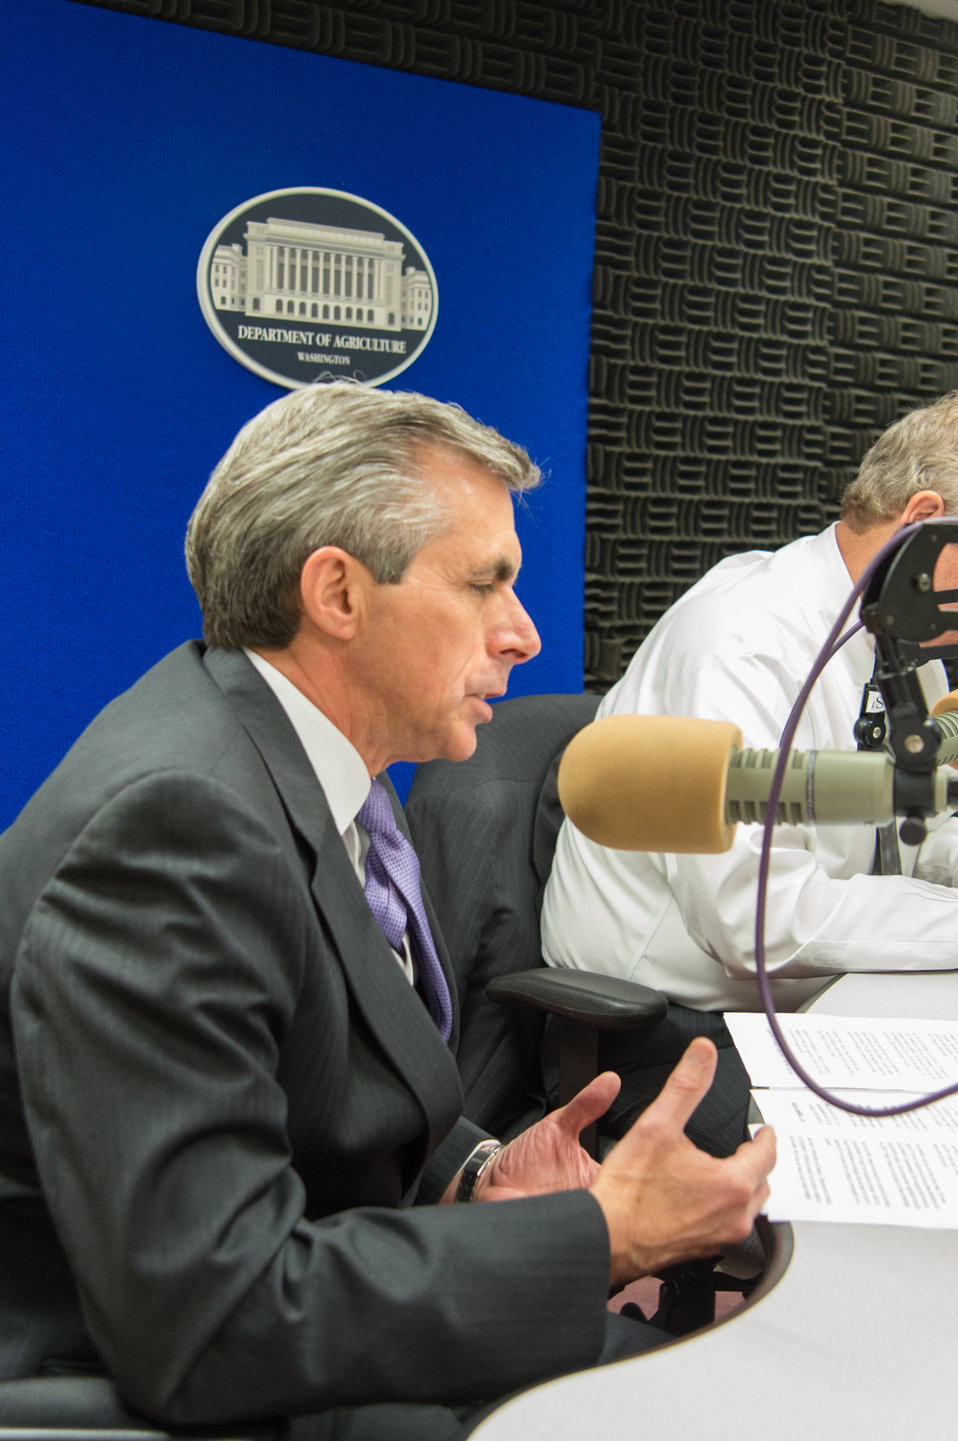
U.S. Navy Rear Admiral James Barnett (retired) a member of, “Mission: Readiness Military Leaders for Kids” a group of retired generals and admirals who have strongly voiced their opposition to efforts by Members of Congress and special interests to weaken nutrition standards meets with Agriculture Secretary Tom Vilsack for a media call at the U.S. Department of Agriculture (USDA) radio studio in Washington, D.C. on Thursday, May 22, 2014. According to Mission Readiness, more than one in five young Americans is too overweight to enlist in the armed services, which represents a major threat to national security. Approximately 75 percent of all young Americans between the ages of 17 and 24 are unable to join the military for various reasons including being physically unfit.